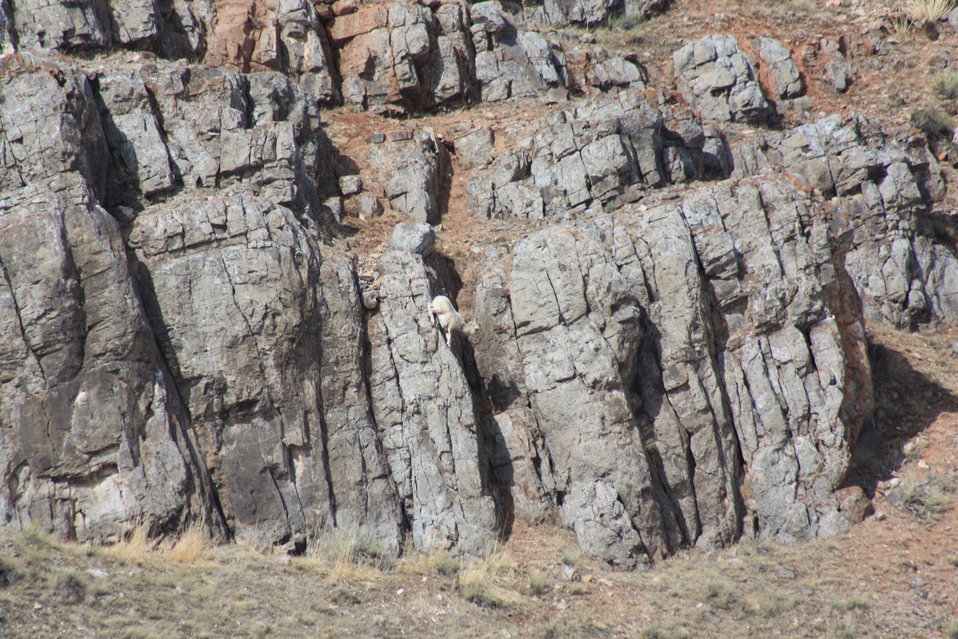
Bighorn Sheep on Miller Butte

Bighorn sheep have split hooves and rough hoof bottoms that provide a natural grip and help them move easily on rocky, rugged terrain. Here, a lamb demonstrates incredible agility on the east side of the National Elk Refuge's Miller Butte.

Credit: USFWS / Ann Hough, National Elk Refuge volunteer